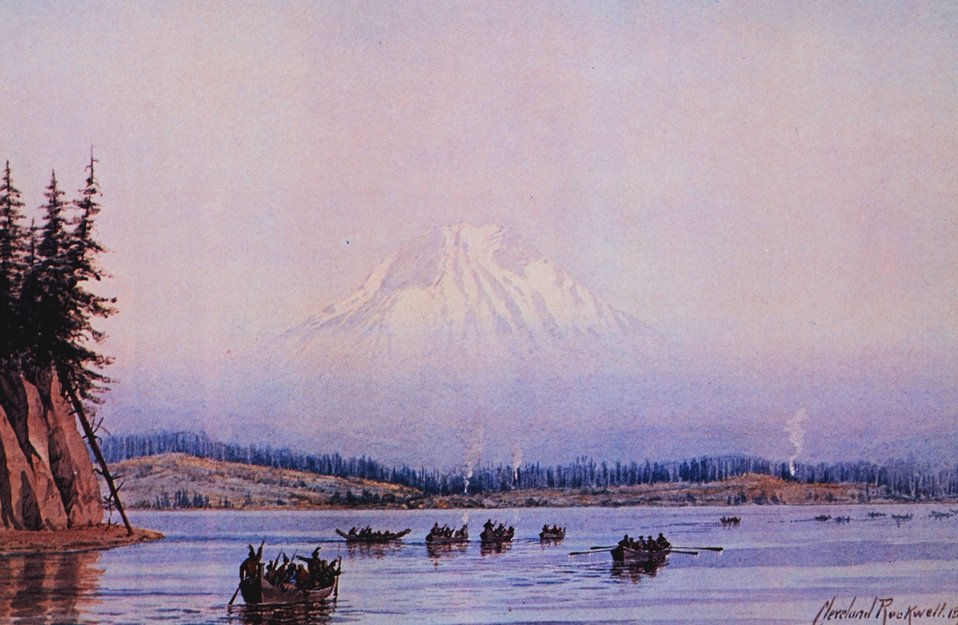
Mount Rainier as seen by Cleveland Rockwell in the 1880's. Image is provided courtesy of Jo and Len Braarud, LaConner WA.